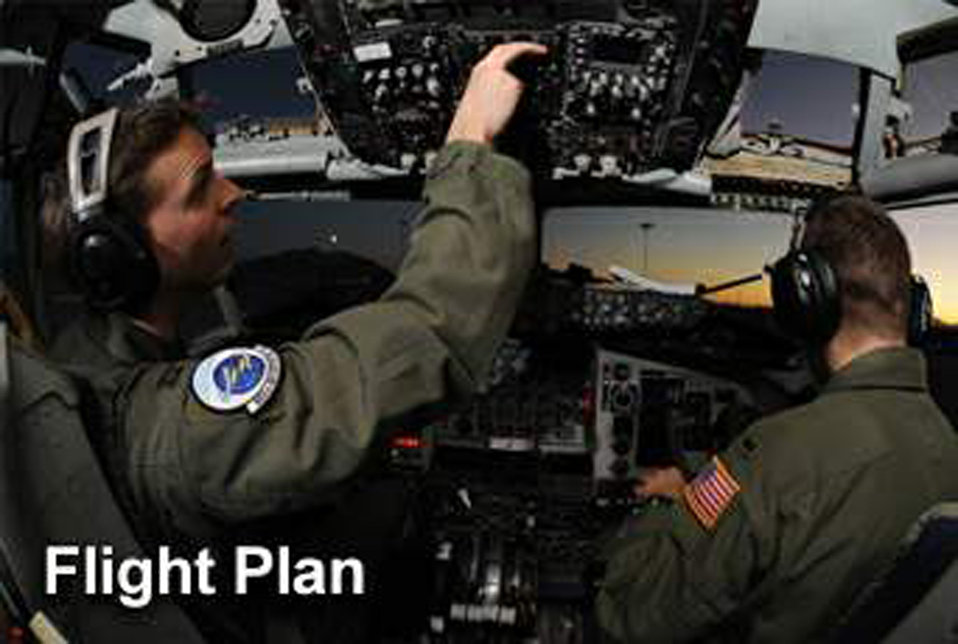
Air Force leaders chart way forward for service

Air Force officials made tough choices and some prudent trade-offs to balance the service across the spectrum of capabilities needed for the future, Air Force leaders said.